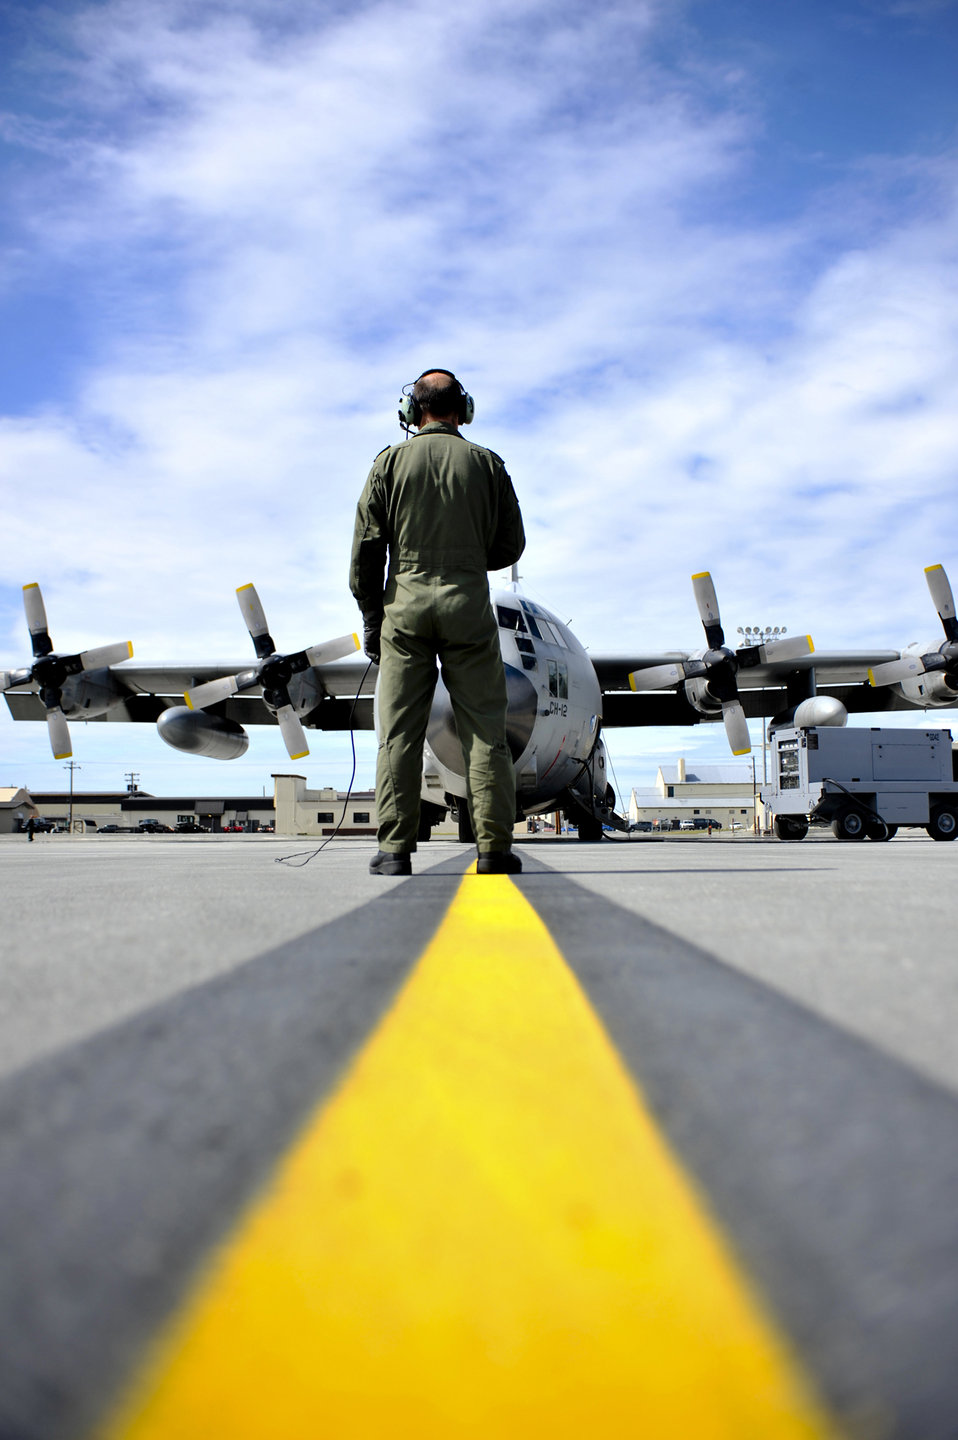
Belgian Air Component Adjudant Gert Van Den Berghe prepares a Belgian C-130 Hercules for takeoff June 22, 2010, at Joint Base Elmendorf-Richardson, Alaska. This was the first time the BAC has participated in Red Flag-Alaska. Adjudant Van Den Berghe is a BAC 15th Air Transport Wing 20th Squadron loadmaster.